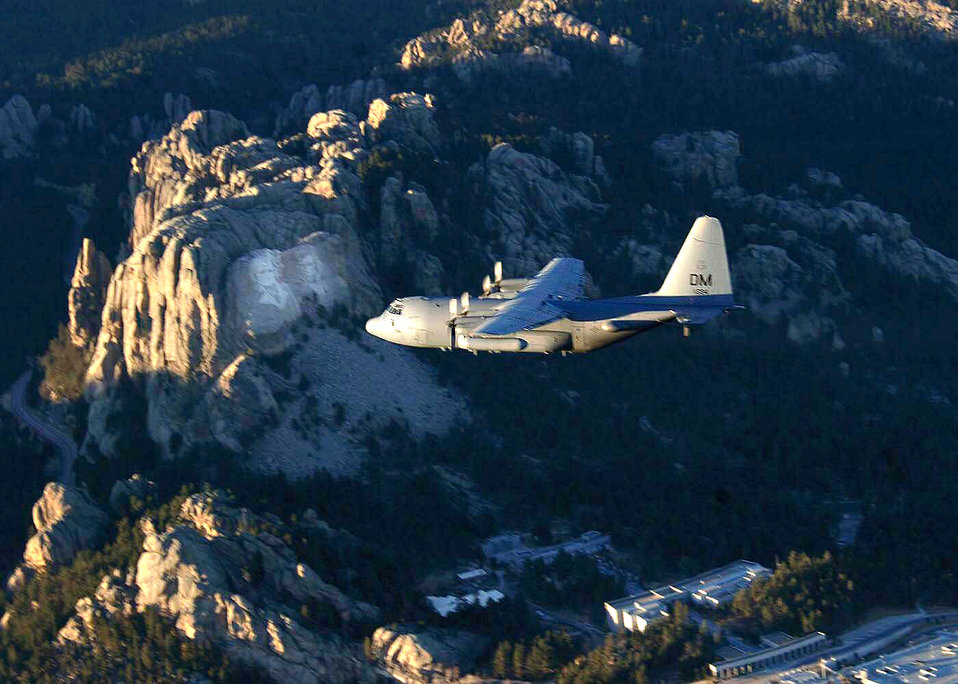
Compass call

OVER SOUTH DAKOTA (AFPN) -- An EC-130H Compass Call aircraft flies over the Rocky Mountains during a training mission. The aircraft is from the 55th Electronic Combat Group at Davis-Monthan Air Force Base, Ariz.